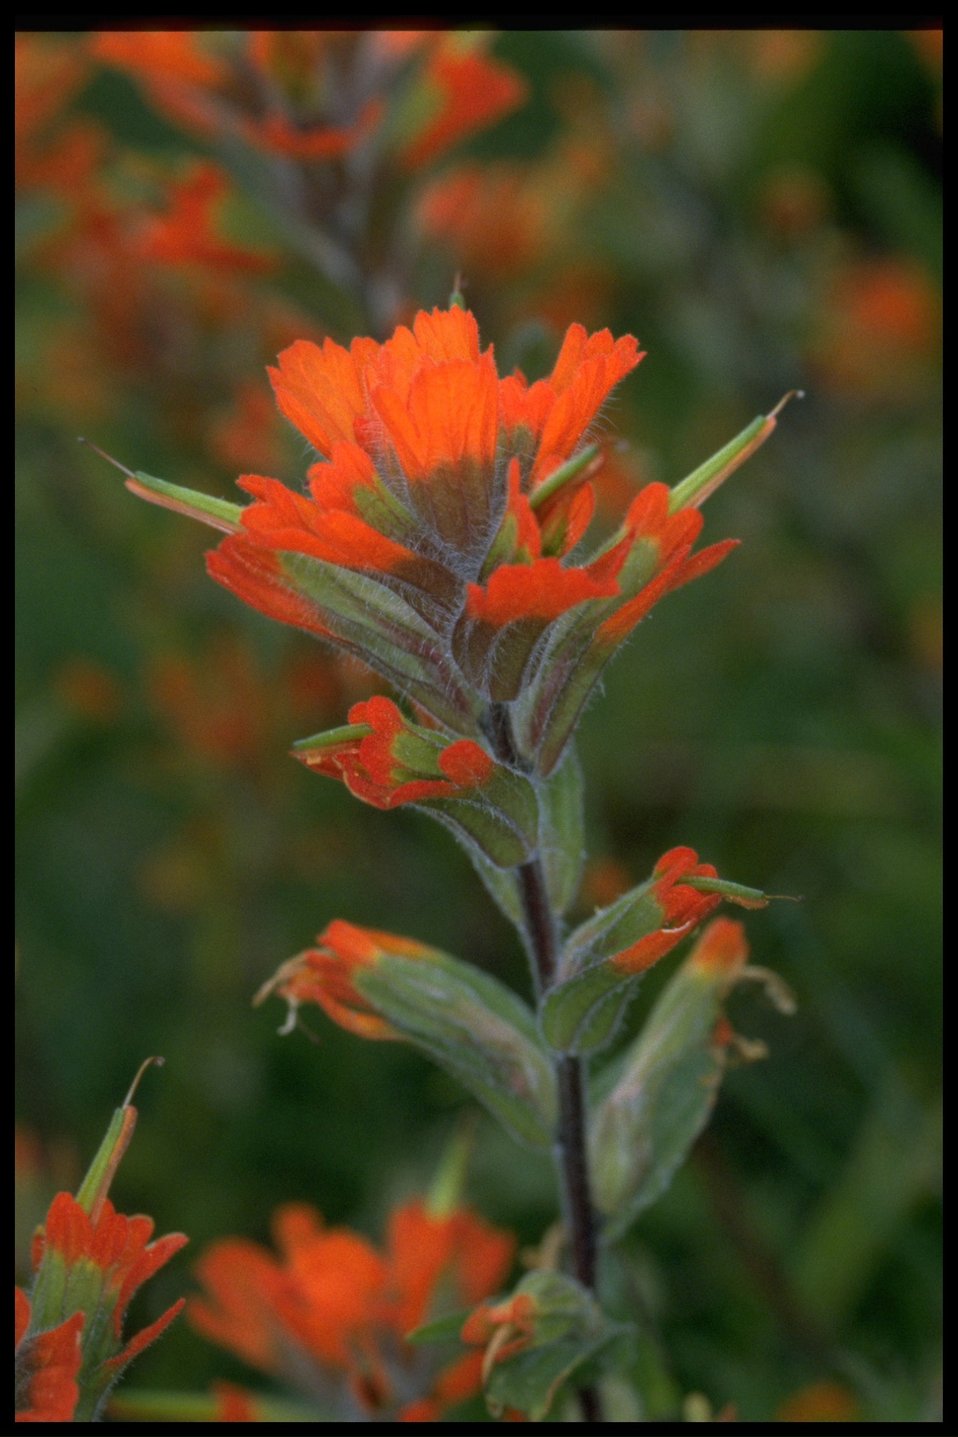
Closeup of wildflower (genus Castilleja).